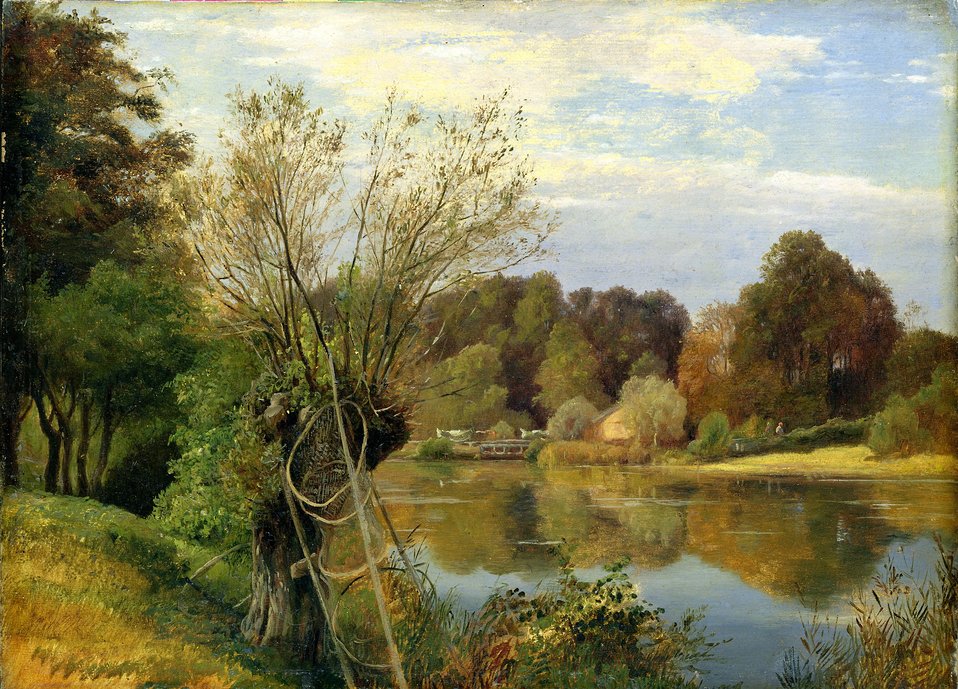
Adolph Friedrich Vollmer - Bei der Aumühle